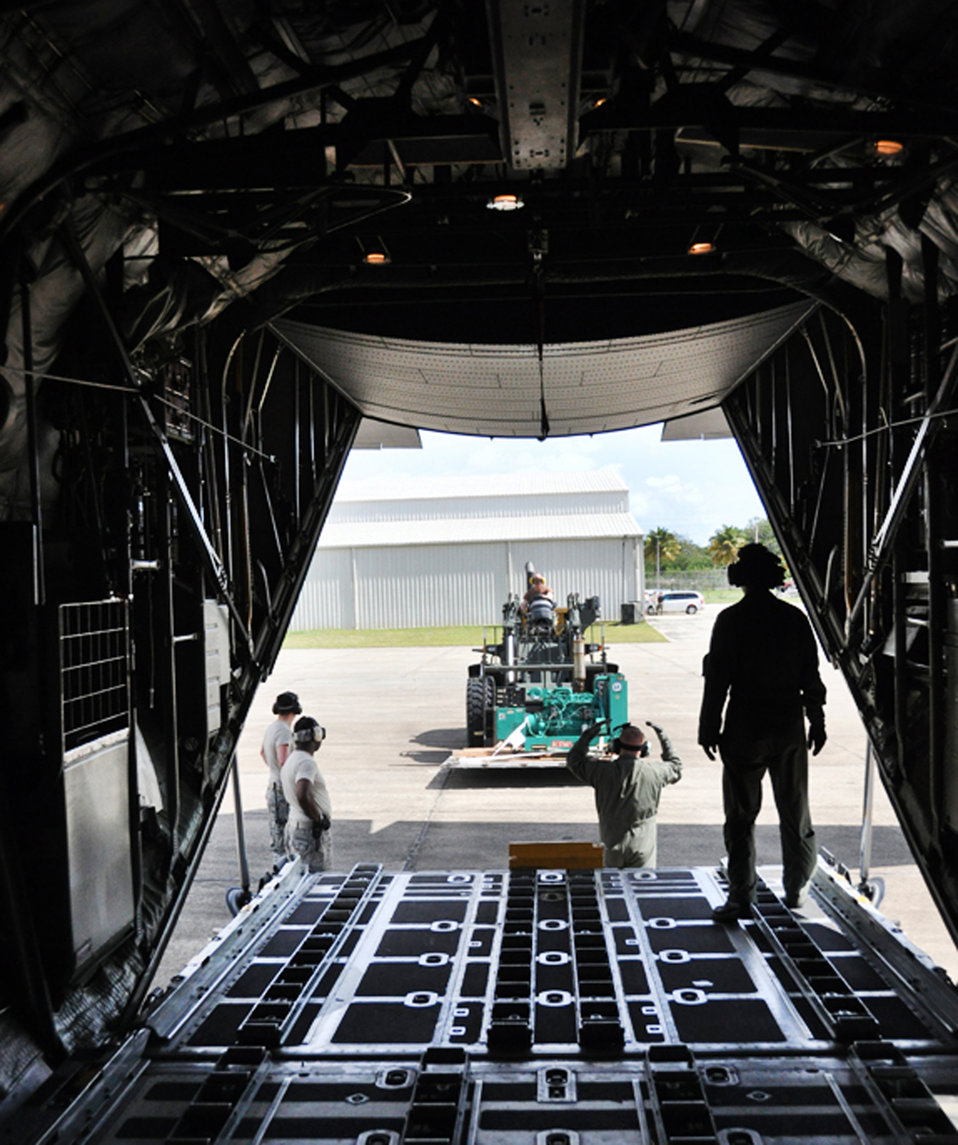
Follow my lead

Airmen from the 817th Contingency Response Group guide a generator onto a C-130 Hercules from the North Carolina Air National Guard during a disaster relief exercise in Puerto Rico. The 817th CRG is part of the 621st Contingency Response Wing from McGuire Air Force Base, N.J.